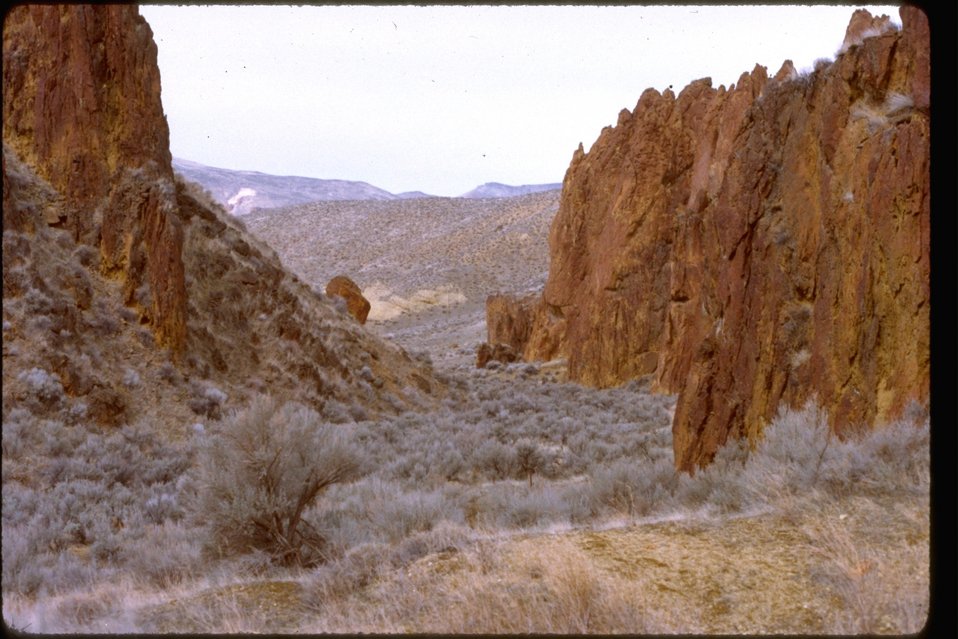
Slocum Creek Wilderness Study Area red rock. WSA OR 3-75.